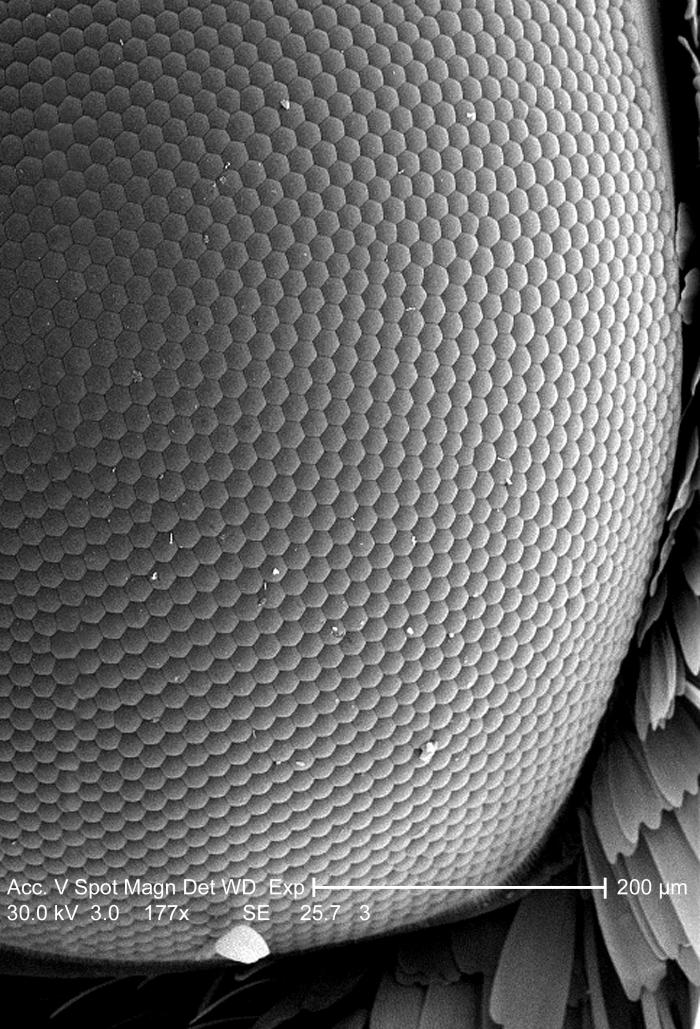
Under this relatively low magnification of 177x, this scanning electron micrograph (SEM) depicted a bird's-eye view of the surface of an unidentified insect's compound eye. Discovered diceased on the grounds of the Decatur, Georgia suburbs, the eye is seen to be composed of repeating hexagonally-shaped units known as 'ommatidia', hence the term 'compound'. The white specs on the surface of the eye are merely debris particles of unknown origin. In order to fully appreciate the structural hierarchy of the compound eye, see PHIL 7875, this image (7877), 7878, 7879, 7880, and 7881, for successively greater magnifications of this visual structure.